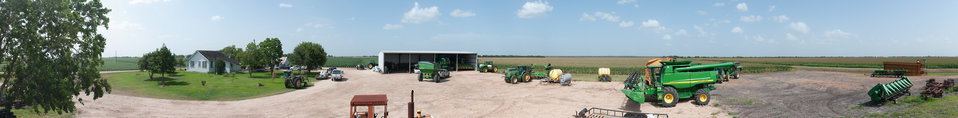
This is a panoramic view of T and S Marek Farms in in Wharton County, TX on Jun. 20, 2013. The 3,000 acre farm that produces #2 yellow corn, milo (grain sorghum) for feed, upland cotton and cattle USDA photo illustration by Lance Cheung.